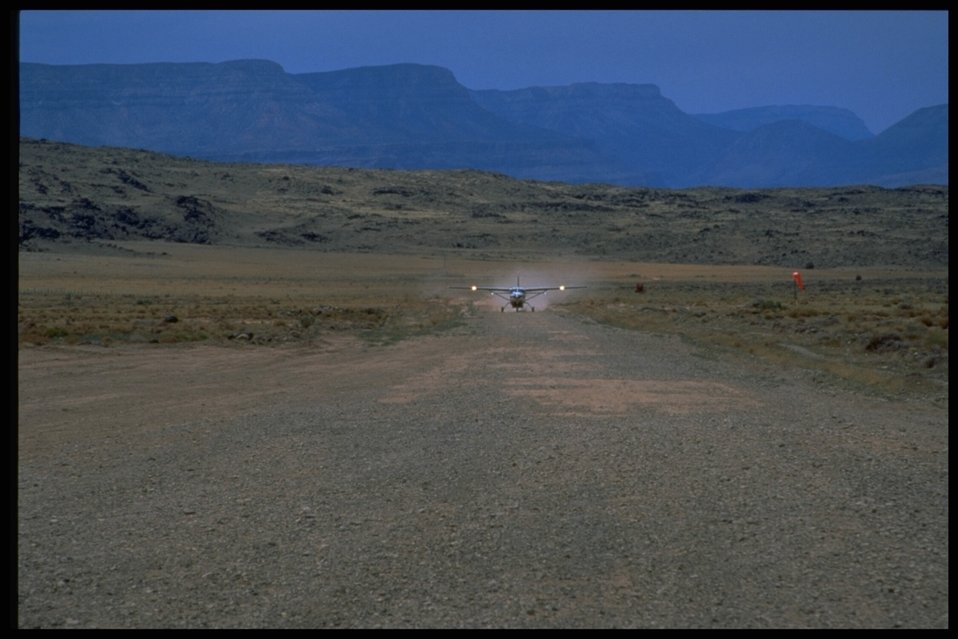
A small plane lands on a runway in the Parashant National Monument area.